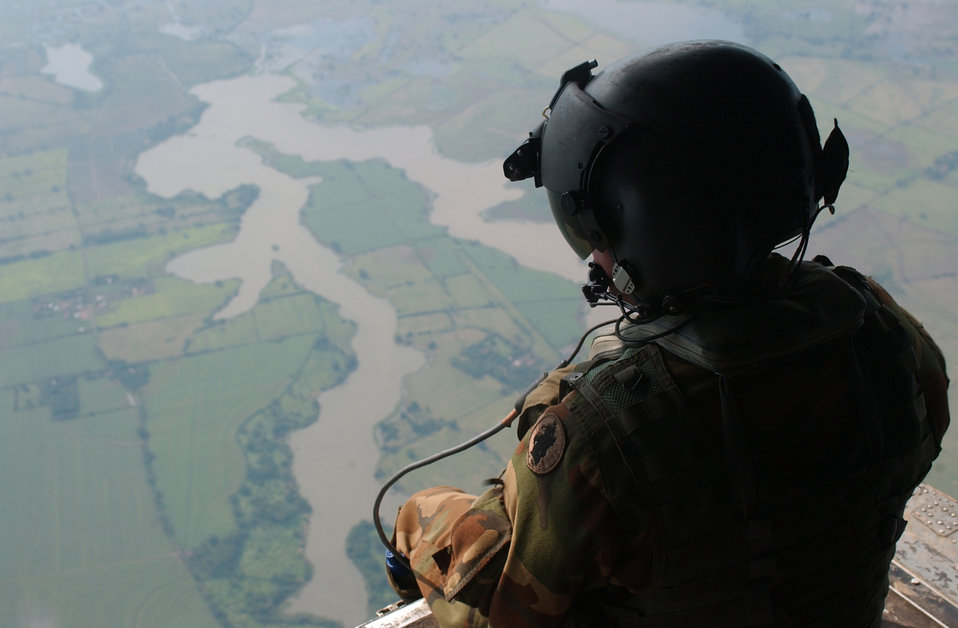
Guatemala relief effort

OVER GUATEMALA -- Army Sgt. Damon Houle examines the countryside to assess the damage caused by Hurricane Stan which flooded much of the country. Sergeant Houle and members of Joint Task Force-Bravo arrived here Oct. 7 to help airlift relief supplies to those affected by the hurricane. Sergeant Houle is a crew chief assigned to the 1st Battalion, 228th Aviation Regiment.